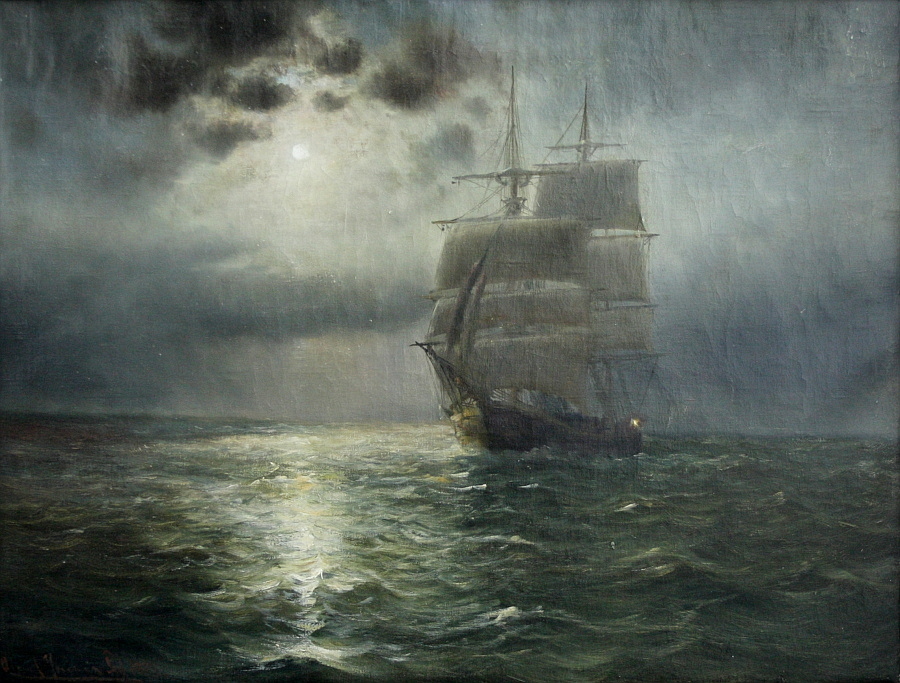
'Mondnacht im Kattegat', Öl auf Leinwand, unten links signiert und datiert 'Alfred Jensen Prof. 1915', verso in dänisch betitelt 'Maaneskinsnat i. Kattegat', 53 x 70 cm